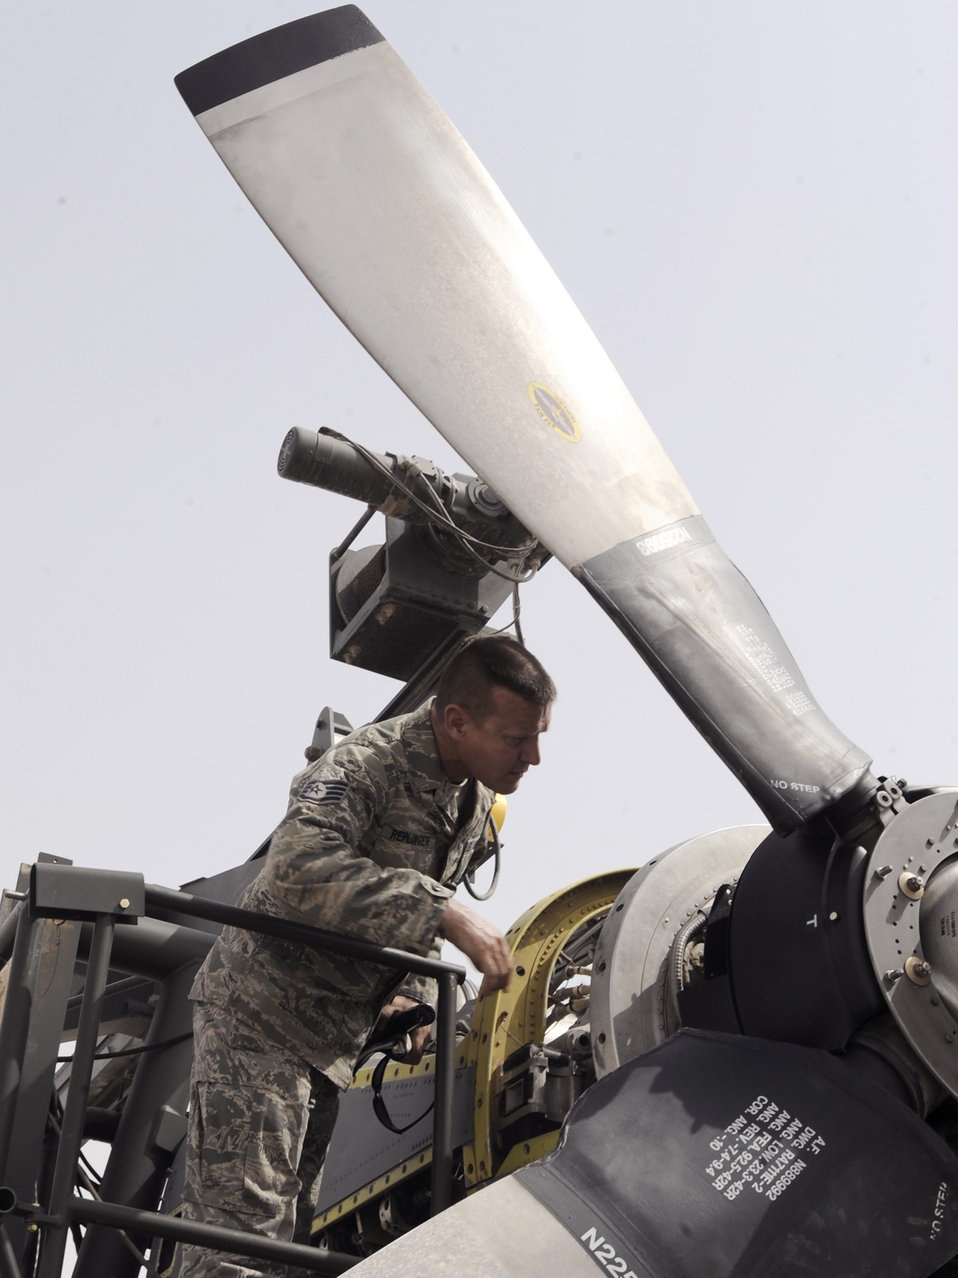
New test cell

Tech. Sgt. Richard Replinger, a turbo propulsion craftsman with the 379th Expeditionary Maintenance Squadron at an air base in Southwest Asia, performs a pre-run inspection on a C-130H Hercules engine June 14 prior to running a test on the engine. This is the only T56 test cell in the U.S. Central Command area of responsibility. The T56 enables maintainers to test engines in the AOR instead of sending them back to Ramstein Air Base, Germany. Sergeant Replinger, a native of Fayetteville, N.C., is deployed from Hurlburt Field, Fla.